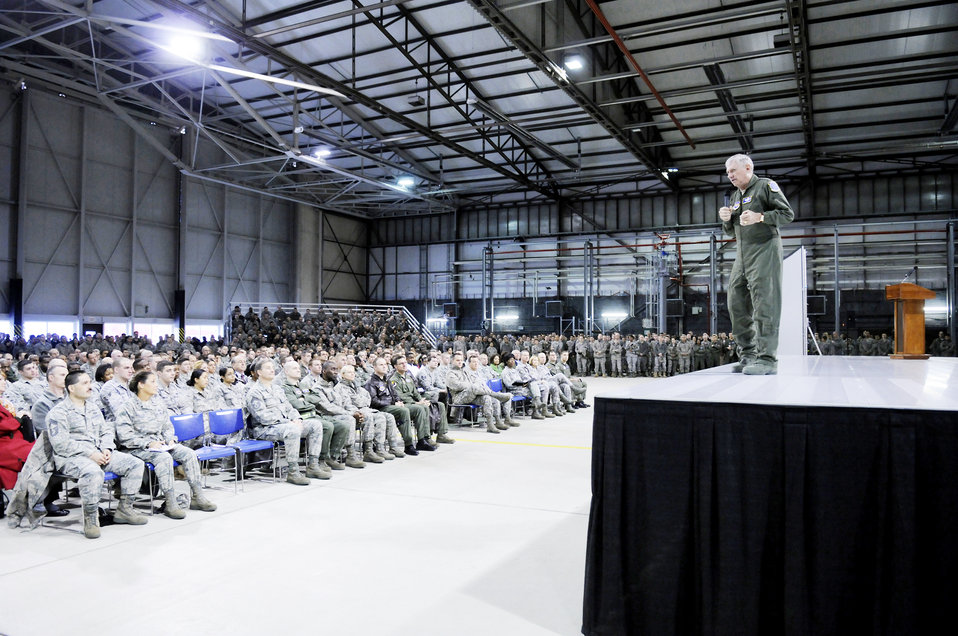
Gen. Brady visits the 86th Airlift Wing

Gen. Roger A. Brady, U.S. Air Forces in Europe commander, speaks to members of the 86th Airlift Wing at Ramstein Air Base, Germany, during a wing-wide call March 2. During the meeting, General Brady focused on key messages regarding the future of the force.